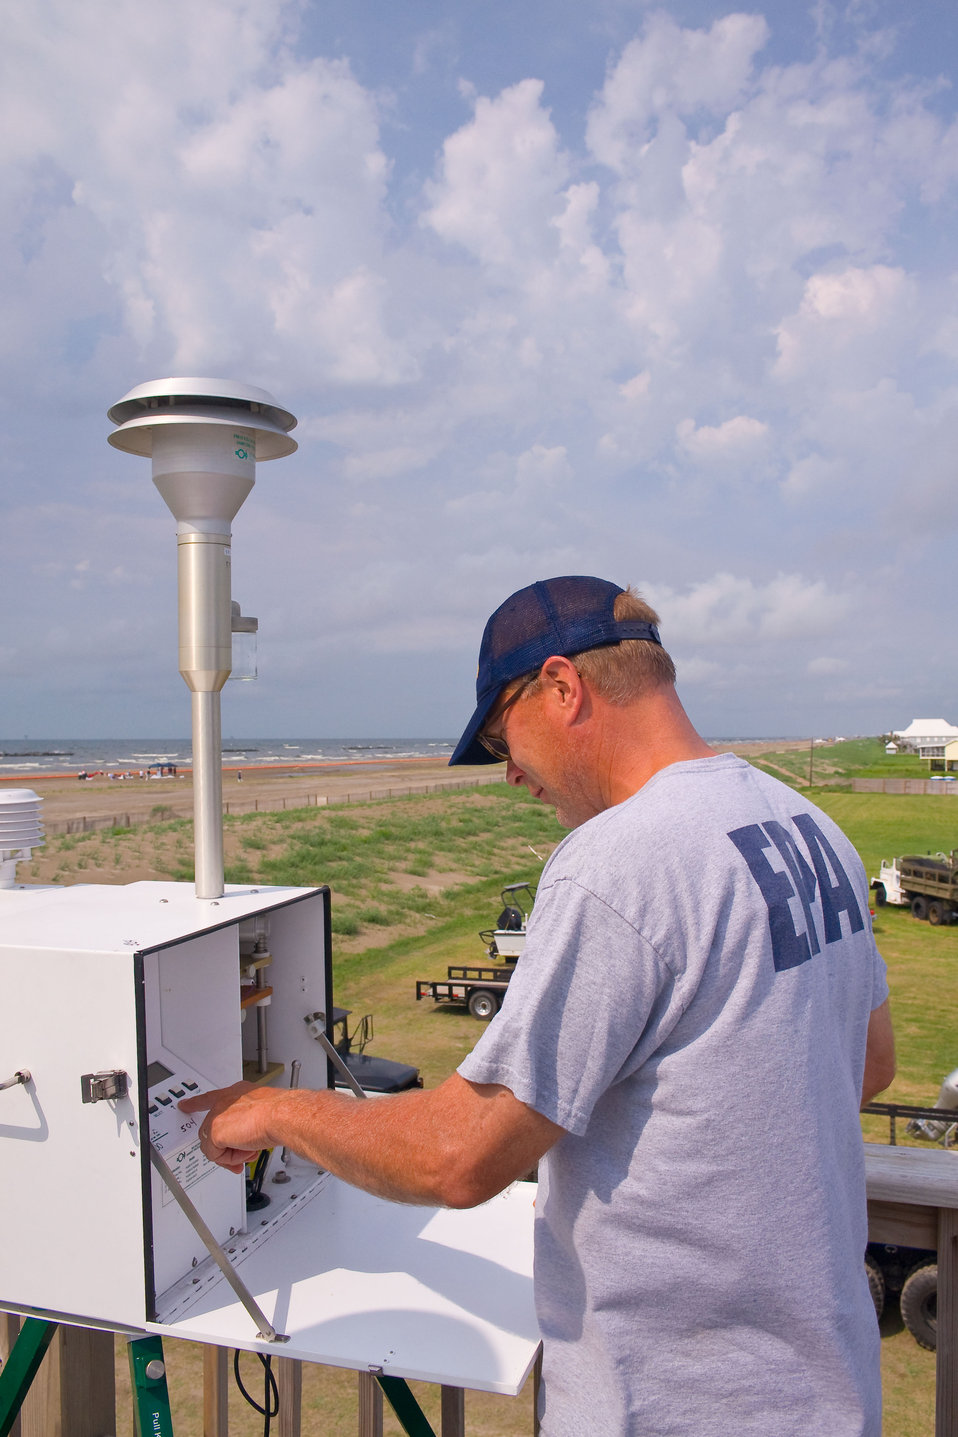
June 4, Maintaining monitoring equipment

Randy Schaademann, EPA, checks air monitoring equipment on Grand Isle, La.